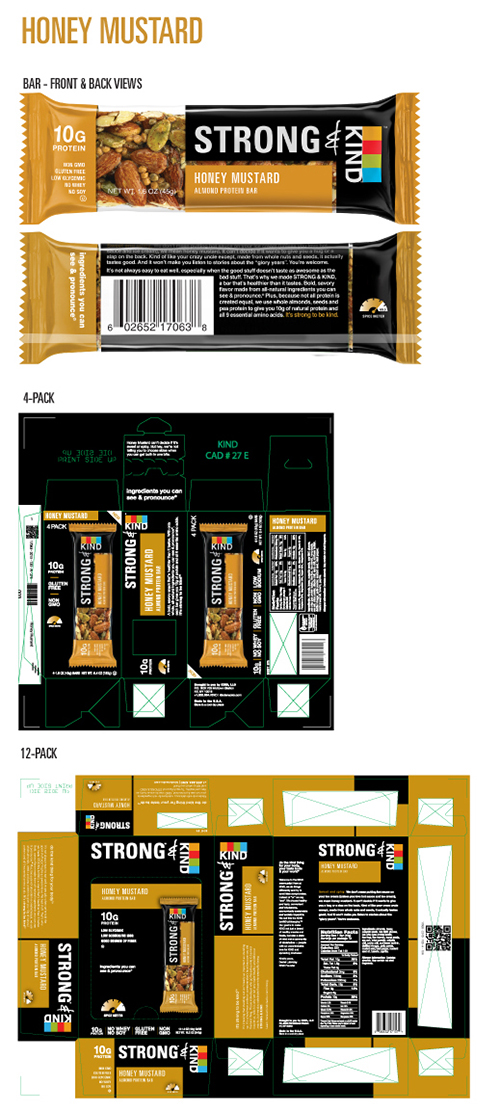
RECALLED – Bars

May 21, 2014 – Product Recall – Kind Healthy Snacks Issues Allergy Alert Due to Potential Presence of Peanut Protein in Strong & Kind Bars and Kind Healthy Grains Maple Pumpkin Seeds Bars.